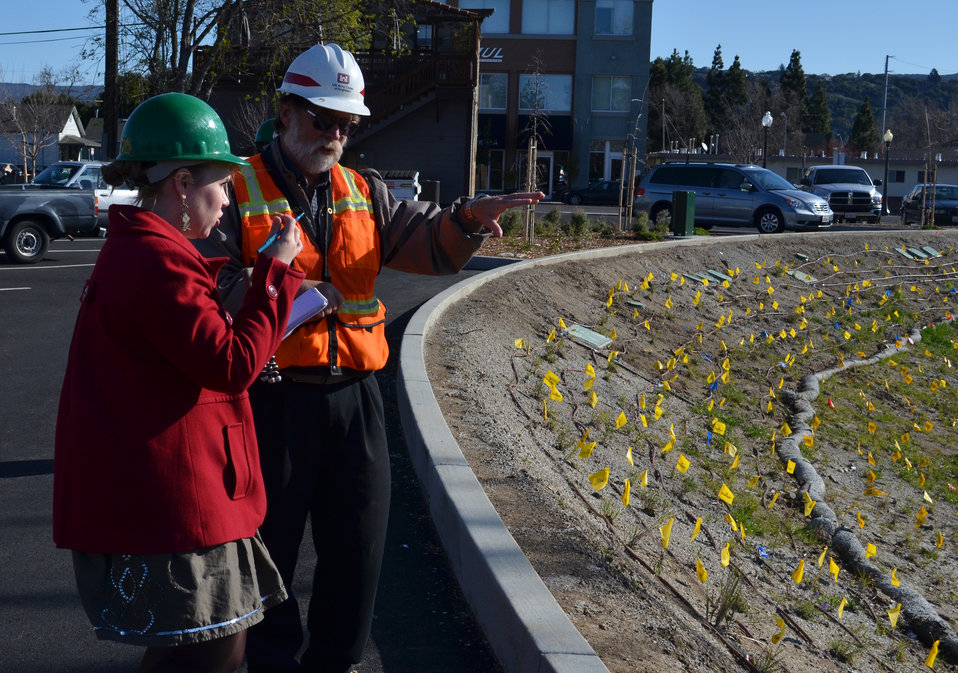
Corps provides glimpse of Napa Creek project progress

Floyd Bolton, deputy area engineer on the Napa Creek project, points out the key features of the project to Napa Valley Register reporter Chantal Lovell during a site tour of the Napa Creek in Napa, Calif., March 7, 2012. Bolton, with the U.S. Army Corps of Engineers Sacramento District, explained how adding box culverts and widening the river channel would allow water to flow more quickly from the Napa Creek to the Napa River. Without these additions, water would overwhelm the snaking creek and overtop its bank, leading to flooding of downtown Napa homes and businesses. Funded by the American Recovery and Reinvestment Act of 2009, the $14.8 million Napa Creek project is a joint effort of the Sacramento District, the city of Napa, and the Napa Flood Control and Water Conservation District to reduce the flood risk for the city.